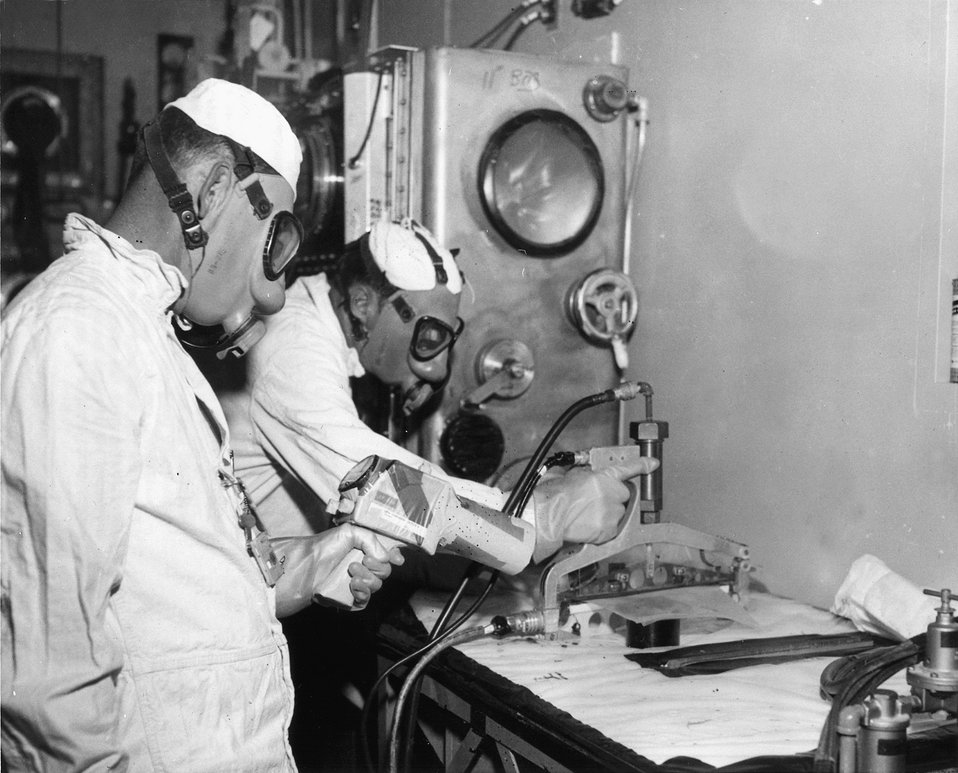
Plutonium is a long-lived radioactive element, but during decay emits alpha particles which are easily stopped. c. 1972